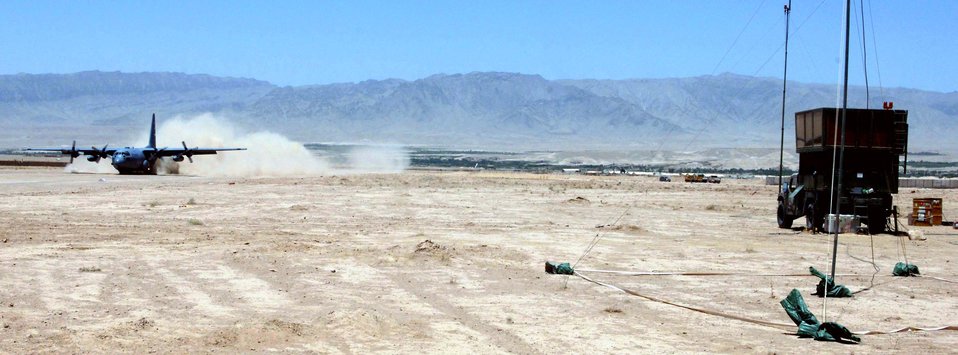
Controlling skies over dangerous territory

A C-130 Hercules from Bagram Airfield, Afghanistan, lands on the dirt runway at Tarin Kowt, Afghanistan, on July 10. An air traffic control team of 11 Airmen is deployed to Forward Operating Base Martello at the request of the Army to control the skies over this war zone.